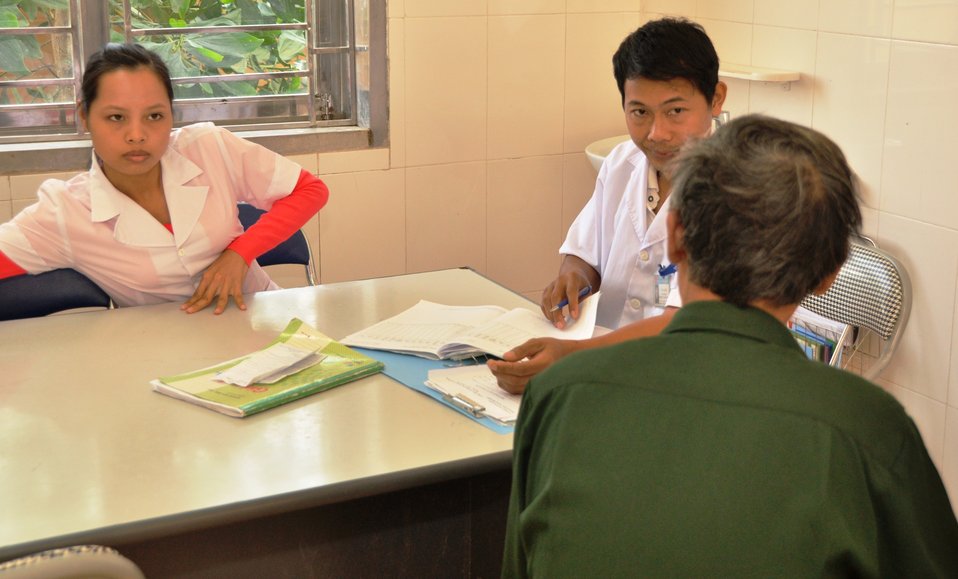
Counseling at a USAID-supported clinic in Dien Bien